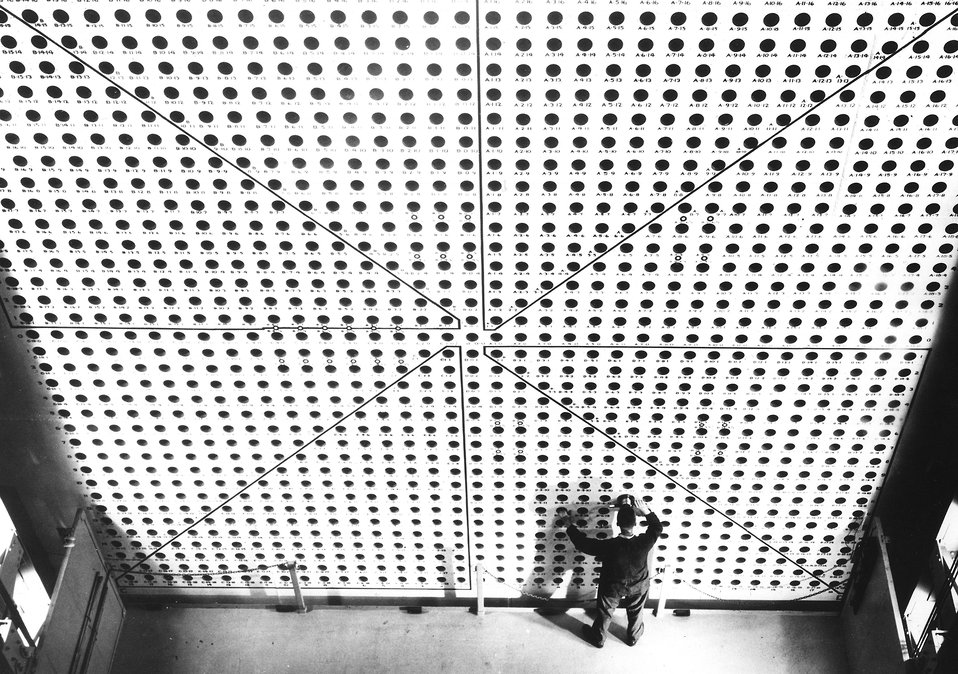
South face of Brookhaven reactor. c. 1957